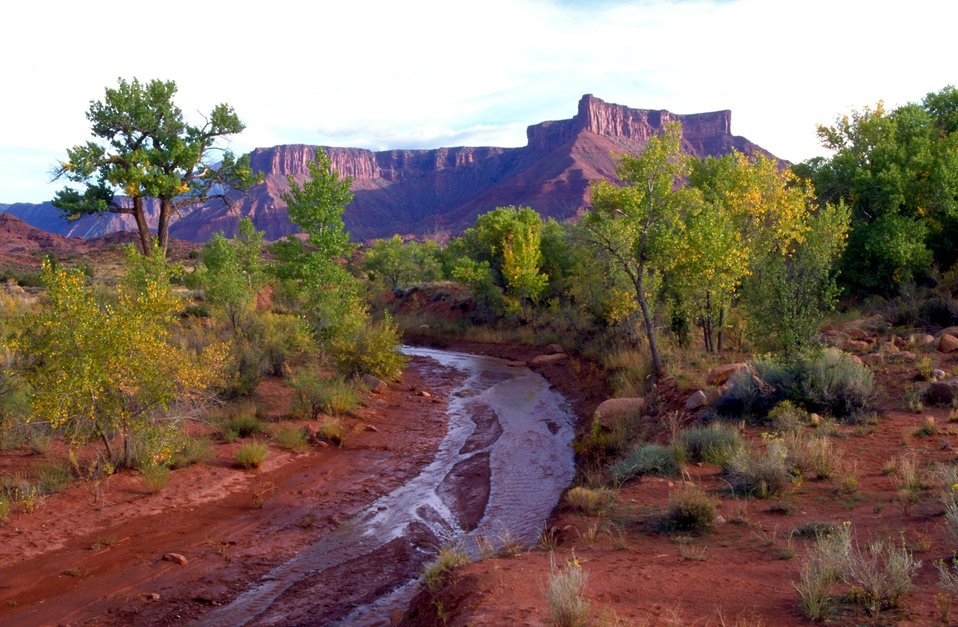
Mary Jane Canyon, Professor Creek and Adobe Mesa in background along Highway 128 near Moab, Utah.